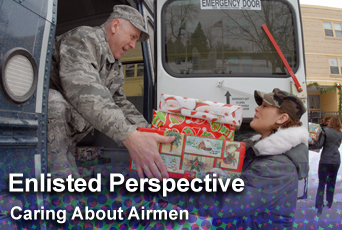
'Perspective' takes care of Airmen

In the newest